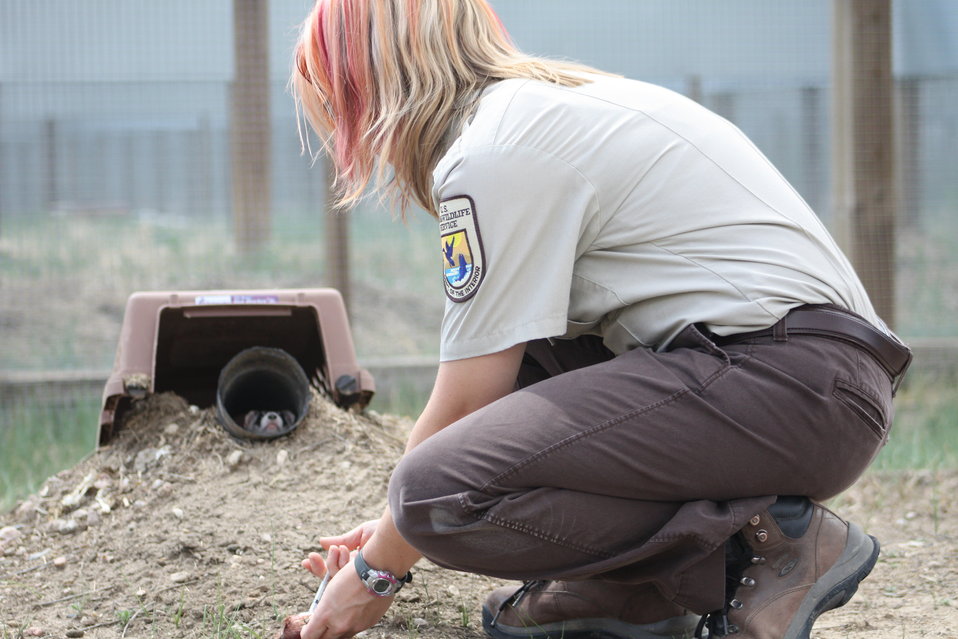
Interns visit the NBFFCC

In the summer of 2012, USFWS Region 6 interns visited the National Black-footed Ferret Conservation Center (NBFFCC) in Colorado to learn how the program reintroduces the endangered Black-footed ferret back into its native habitat.

In this photo, Robyn Bortner (NBFFCC Biologist) feeds the ferrets in their outdoor preconditioning pens!